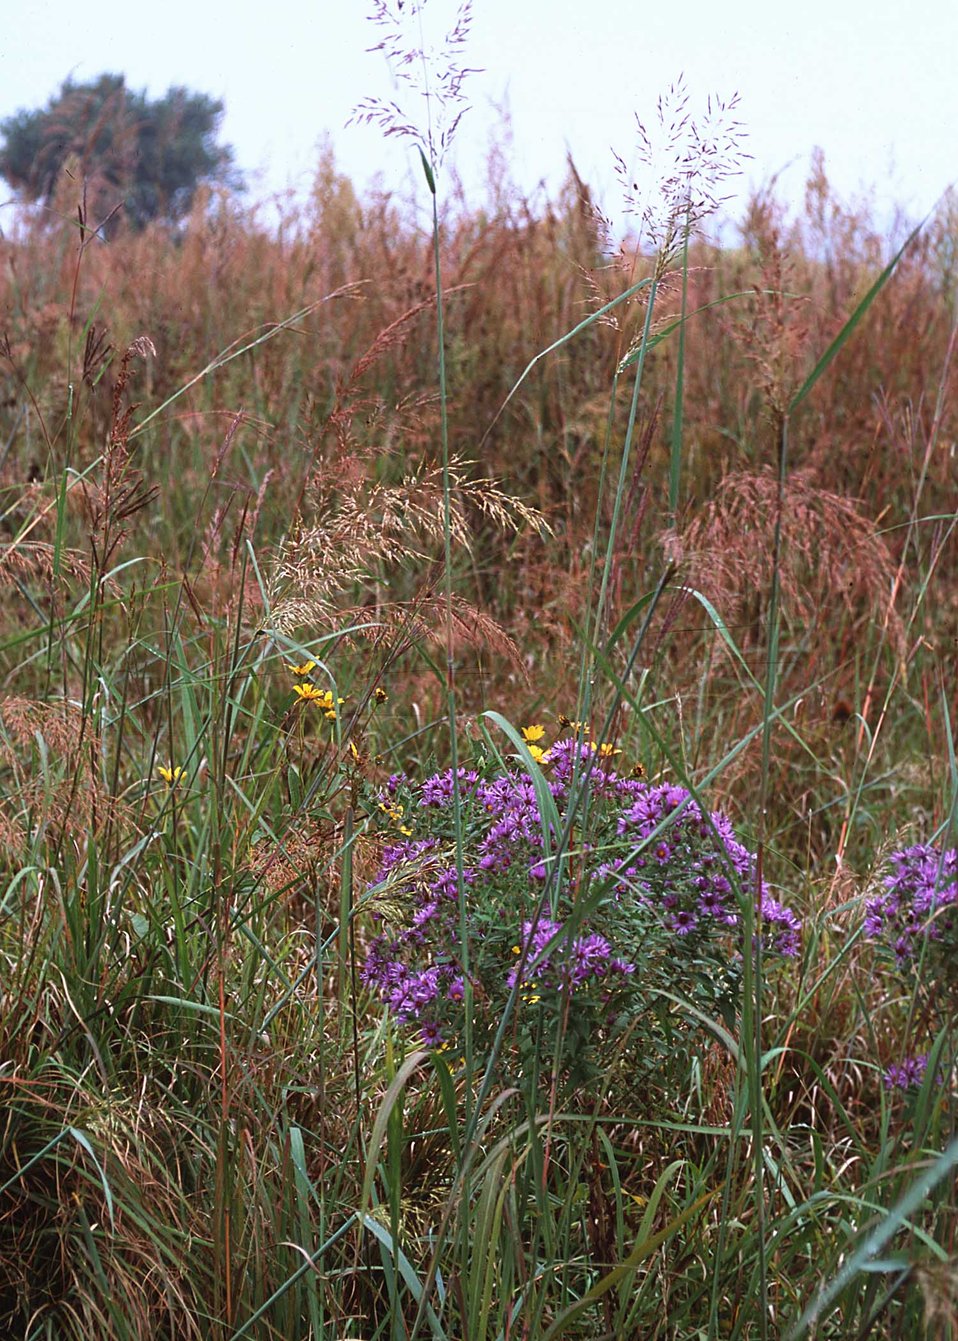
A mixture of native grasses and forbs intended to restore prairie grasses in Linn County, Iowa.